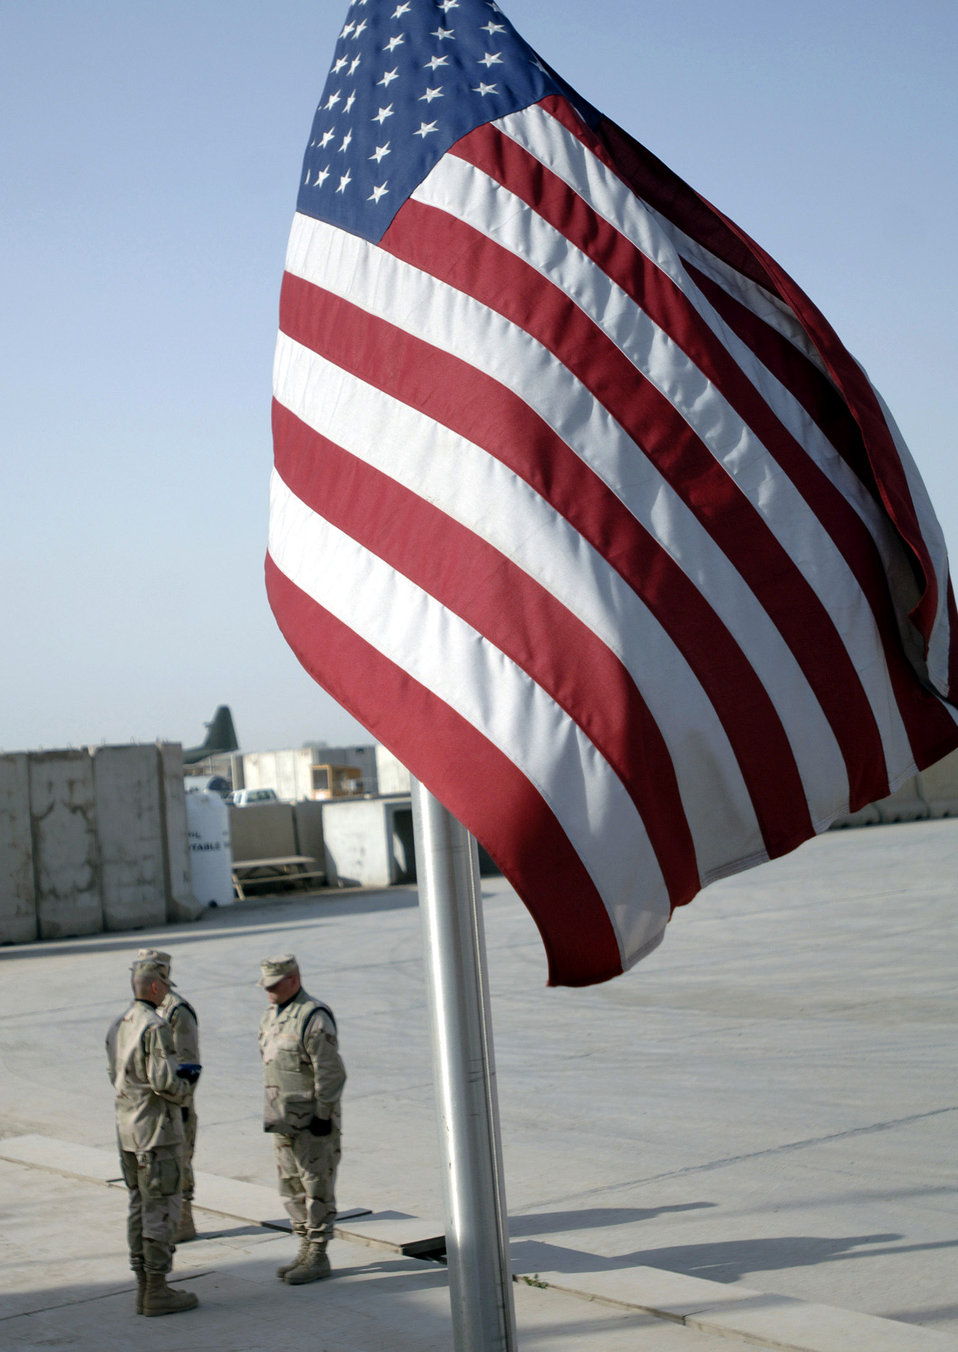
Honoring the flag

Staff Sgts. Andrew Keller and Jody Nitz and Maj. Shannon Kolnsberg conduct an official flag raising and folding ceremony April 21 in Baghdad, Iraq. The Sather Air Base Honor Guard raised and folded 23 U. S. flags. The three Airmen are assigned to the 447th Expeditionary Medical Squadron.